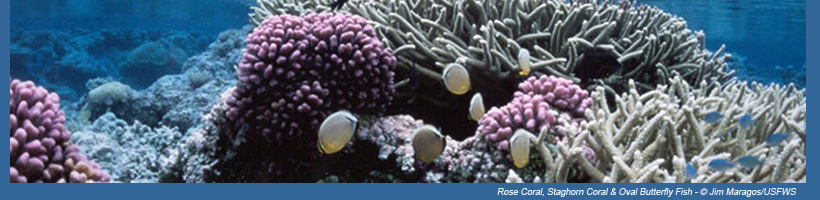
Rose and staghorn coral and oval butterfly fish - Pacific Islands Fish and Widlife Office